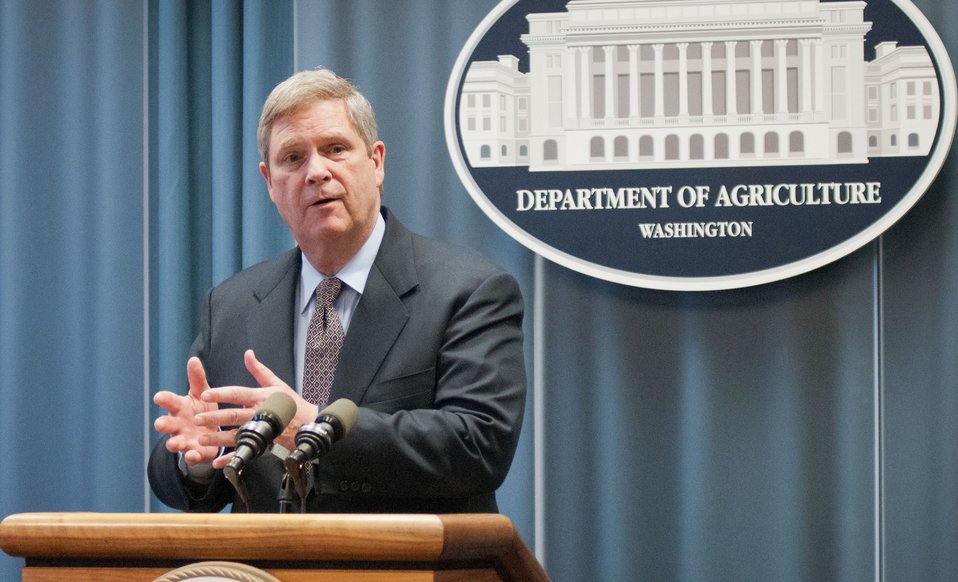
Agriculture Secretary Tom Vilsack talked about agriculture including the delivery, processing and other elements of the food chain the effect jobs in America, during a briefing, and question and answer period for stakeholders about the Agriculture FY2013 budget in Washington, D.C. on Monday, February 13, 2012.